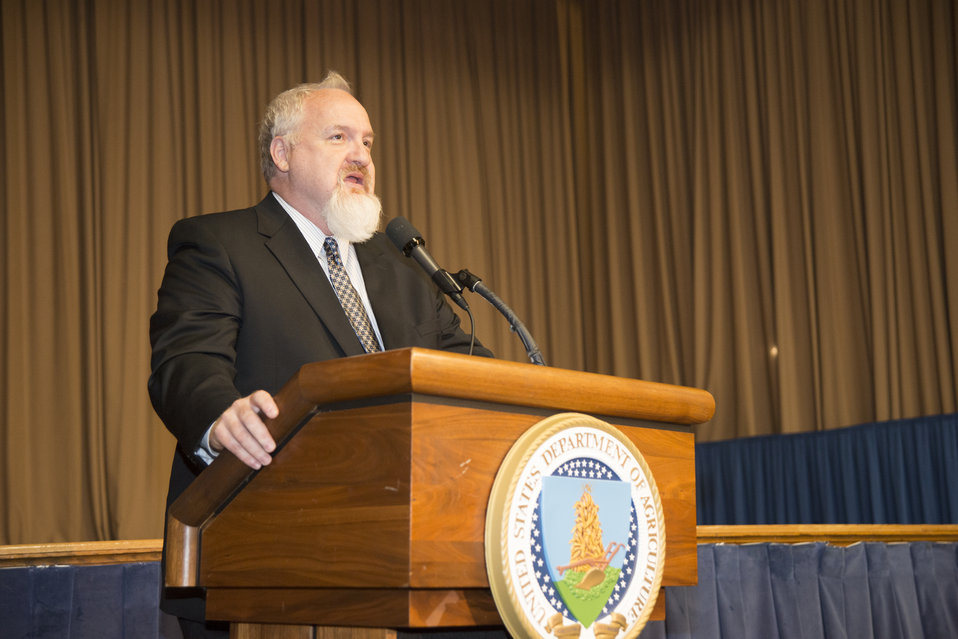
Celebrity Chef Art Smith gives the keynote address at the 2014 Lesbian/Gay/Bisexual/Transgender (LGBT) Pride Observance event held in the Jefferson Auditorium at USDA in Washington, D.C. on Thursday, Jun. 5, 2014.